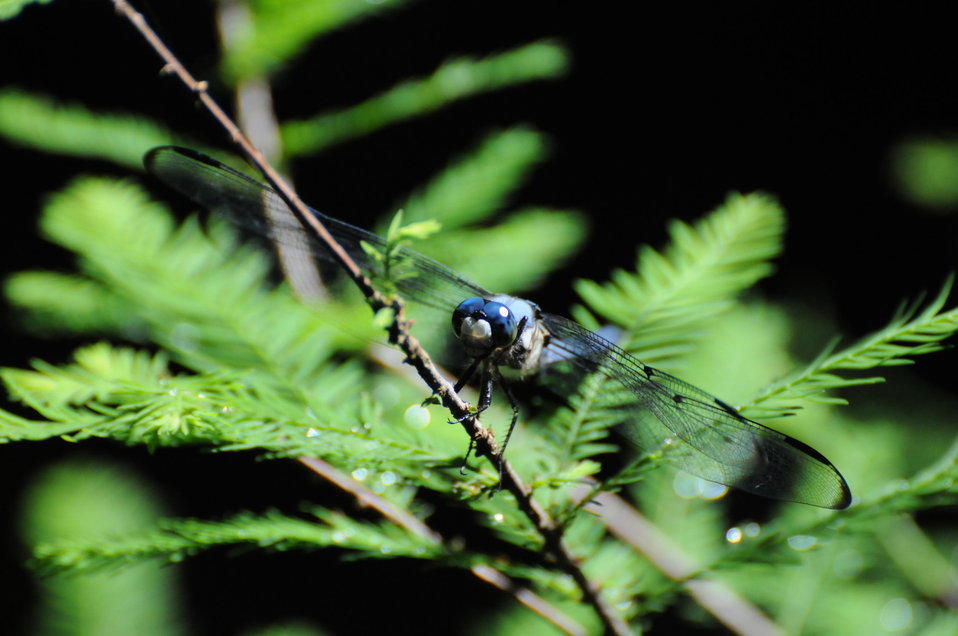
Great Blue Skimmer